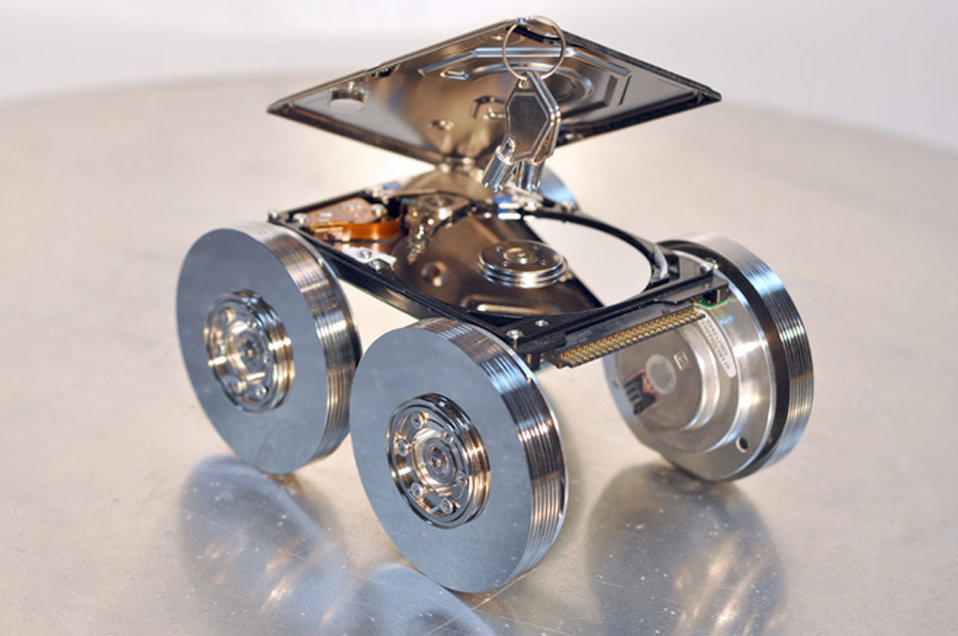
Old hard drive components become medium for unique artwork

Miguel Rivera created this miniature car-like vehicle from old hard drive components. Mr. Rivera is a 386th Expeditionary Communications Squadron systems administrator in Southwest Aisa.